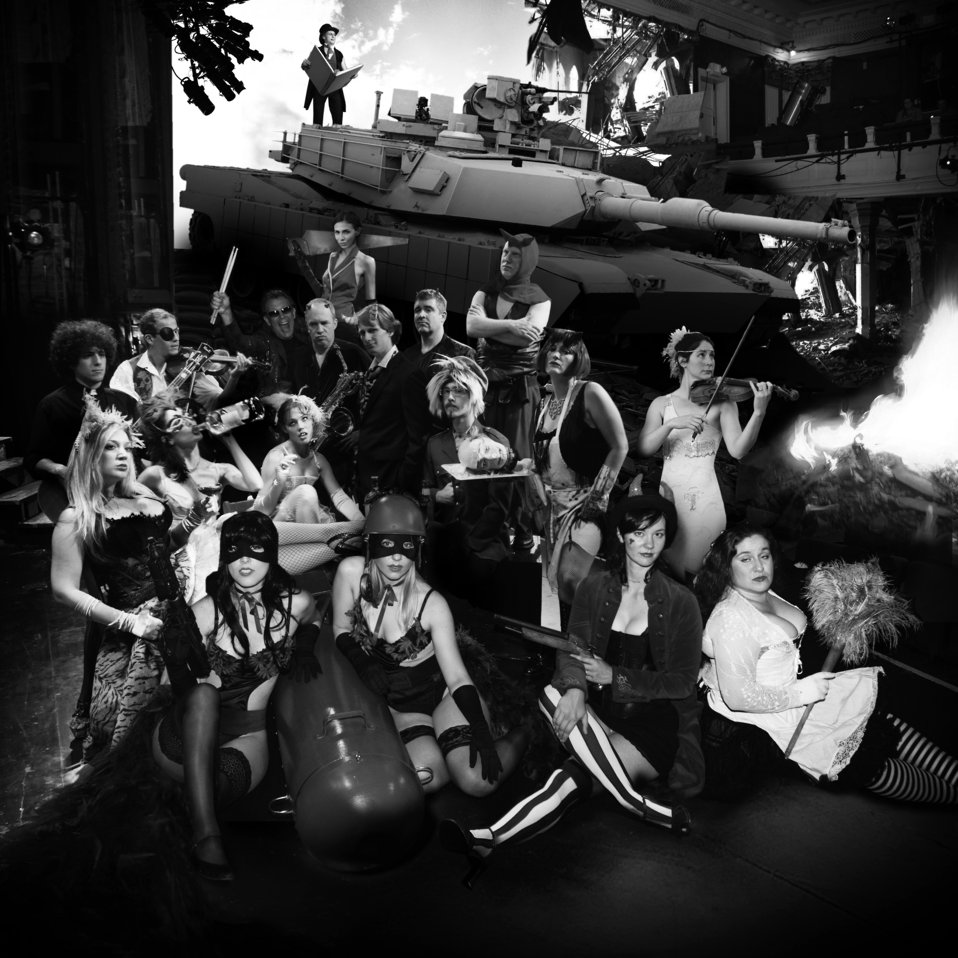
Group photo of Cabaret Red Light